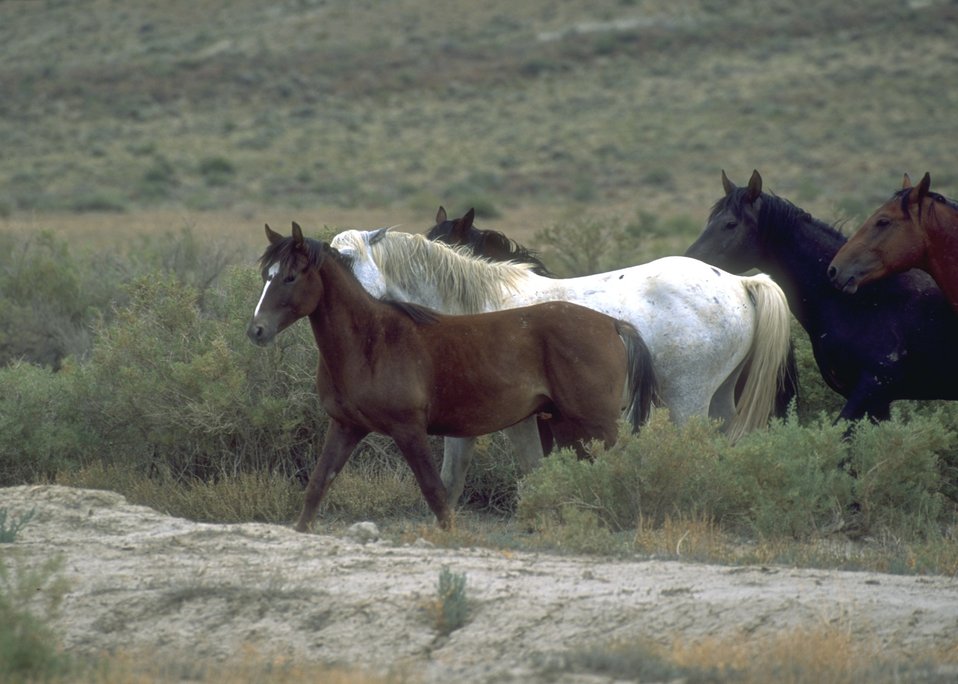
Wild horses, Rock Springs Field Office.